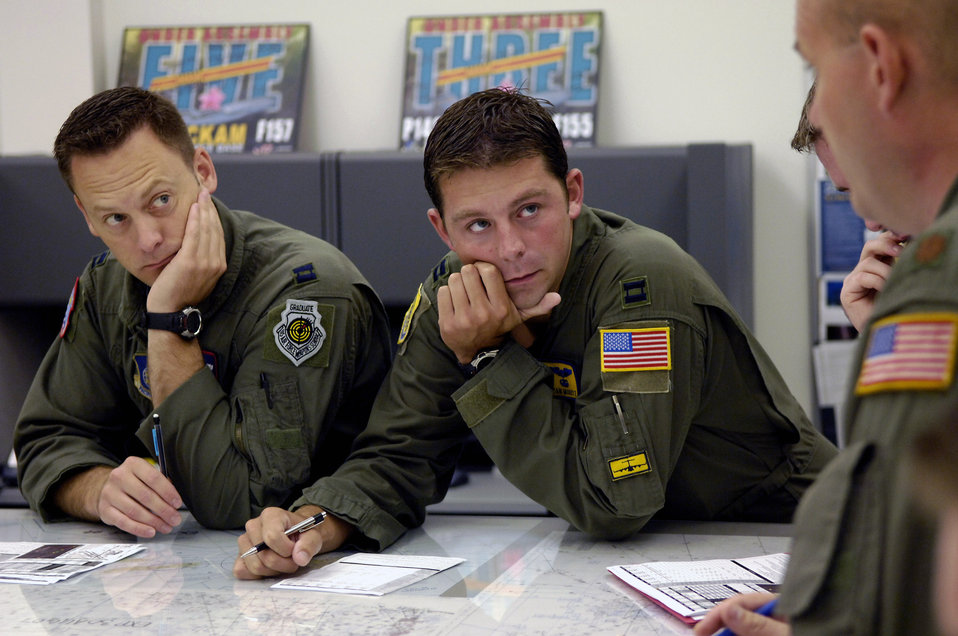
On a mission

Pilots from the 535th Airlift Squadron conduct a crew briefing before leaving for a four-ship airdrop training mission Aug. 13 at Hickam Air Force Base, Hawaii. The Airmen participated in a C-17 Globemaster III four-ship, airdrop training mission to maintain currency and proficiency.